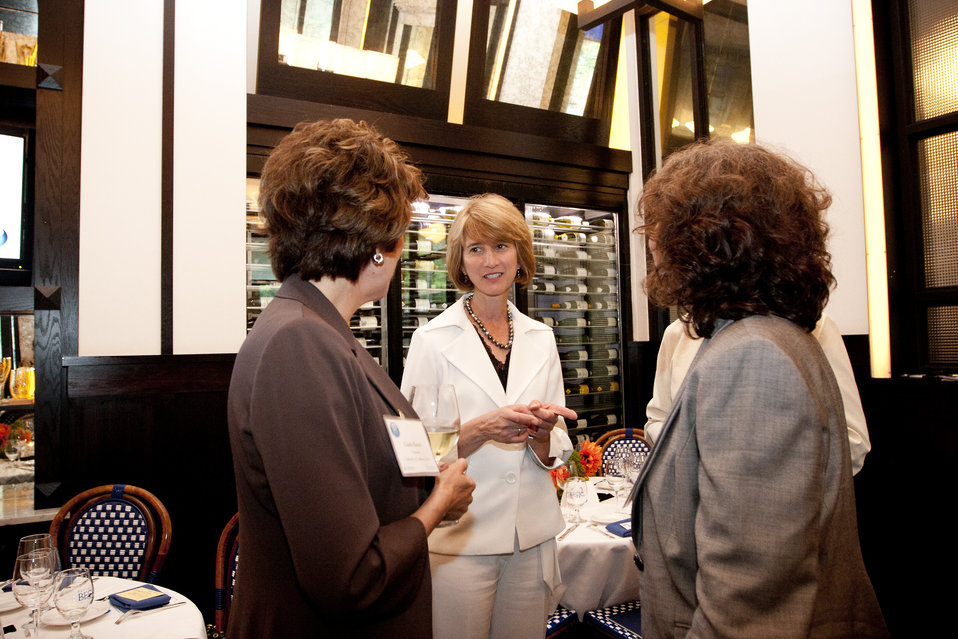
WomenandEnergy 14